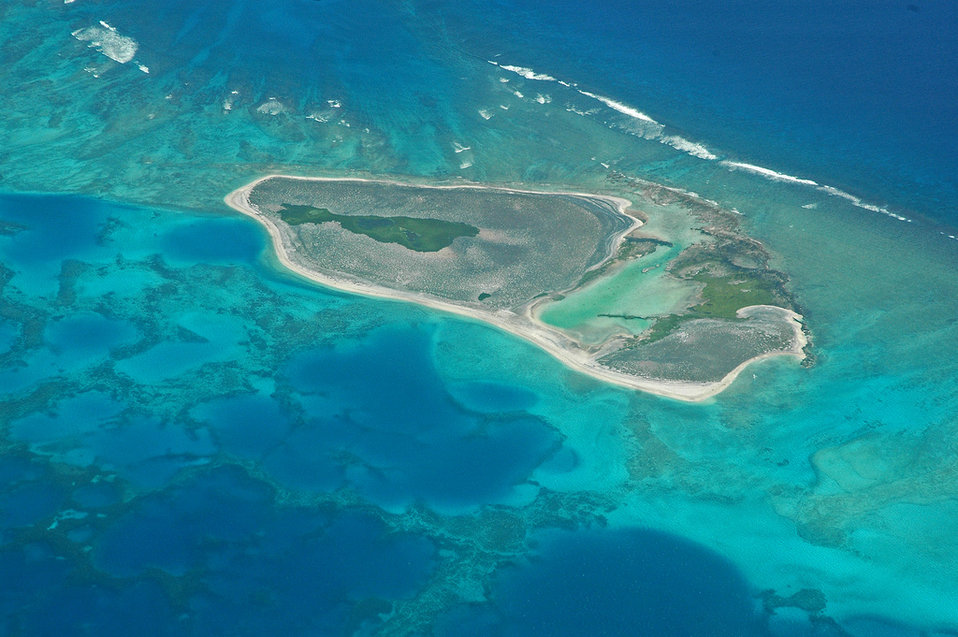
Pearl and Hermes Atoll from the air

Hawaiian Islands National Wildlife Refuge,
Papahānaumokuākea Marine National Monument